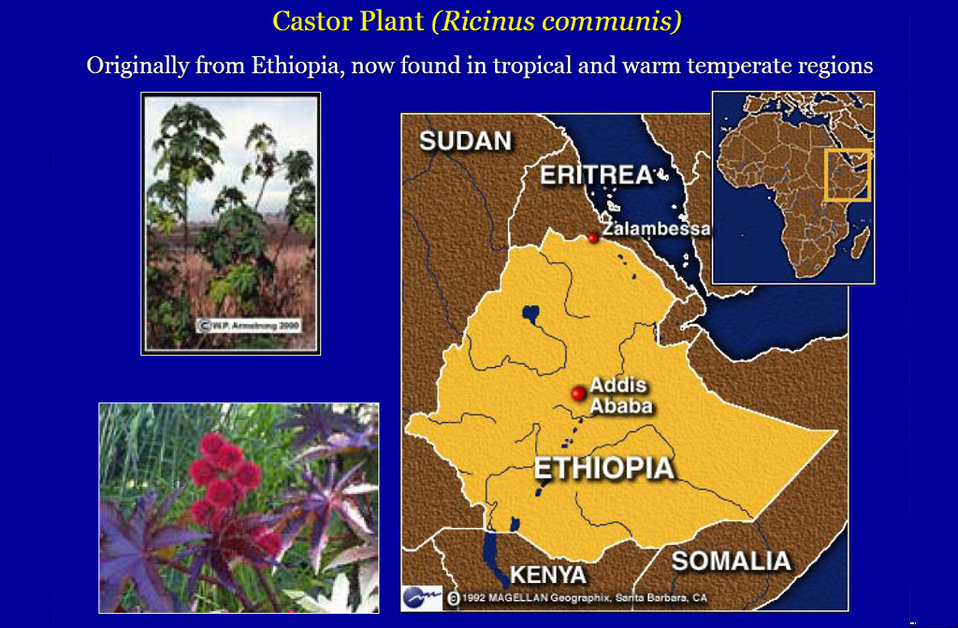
This presentation highlights the history, chemistry, and uses of ricin, a highly toxic poison made from castor beans.